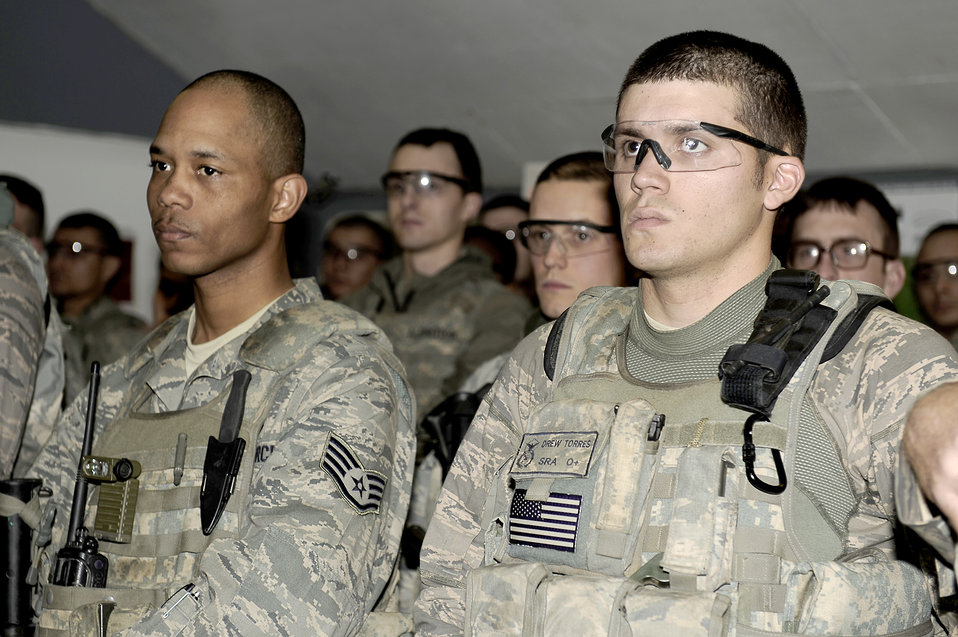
Airmen neutralize threat to Bagram Airfield

Airmen from the 455th Expeditionary Security Forces Squadron line up for guard mount May 21, 2010, at Bagram Airfield, Afghanistan.